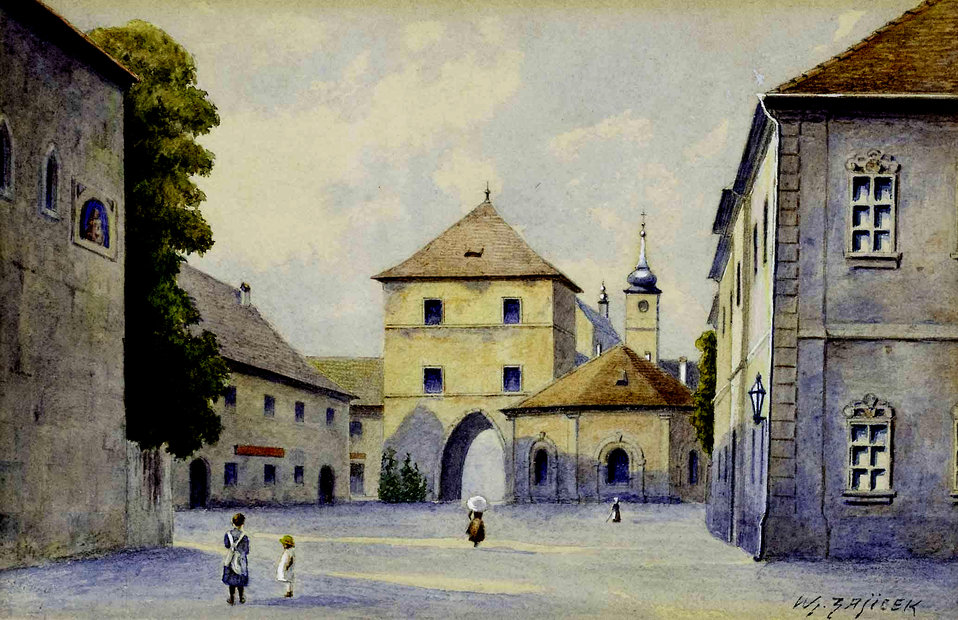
'Freihaus auf der Wieden', unten rechts signiert: Wl. Zajicek, Aquarell auf Papier, ca. 14 x 20 cm